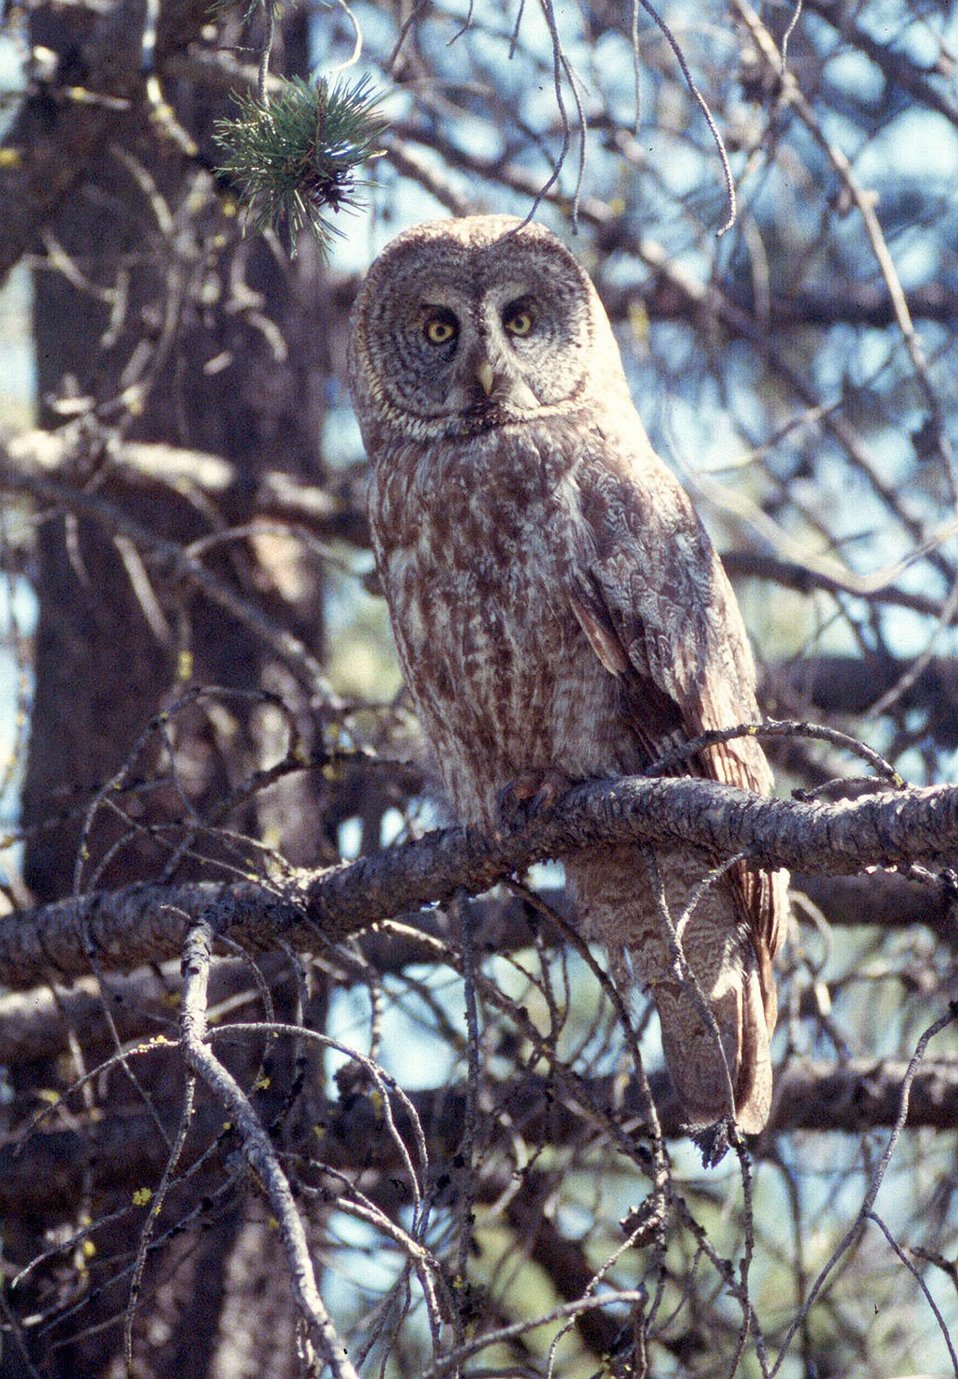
Great Gray Owl (Strix nebulosa) near the Sun River Area on the Deshcutes National Forest in eastern Oregon.